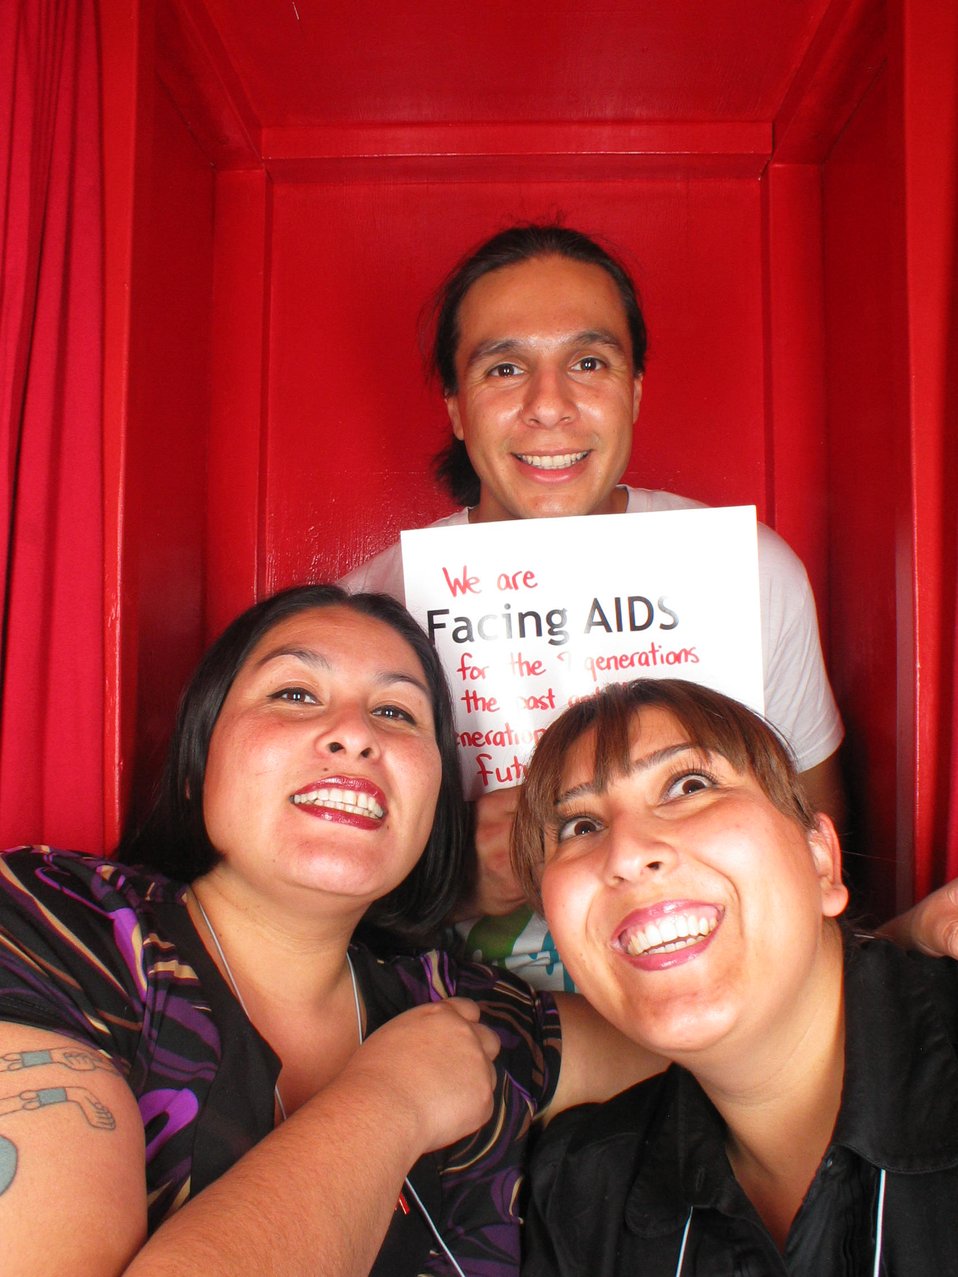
Facing AIDS